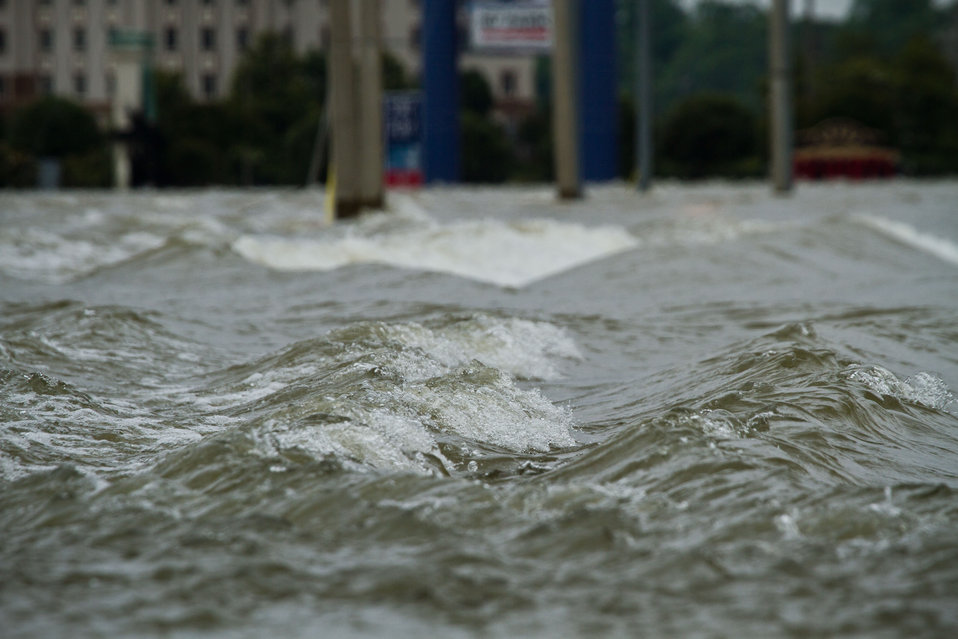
Floods waters from Mississippi River inundated casinos and farms that surround Tunica, MS, on Sunday, May 15. 2011.